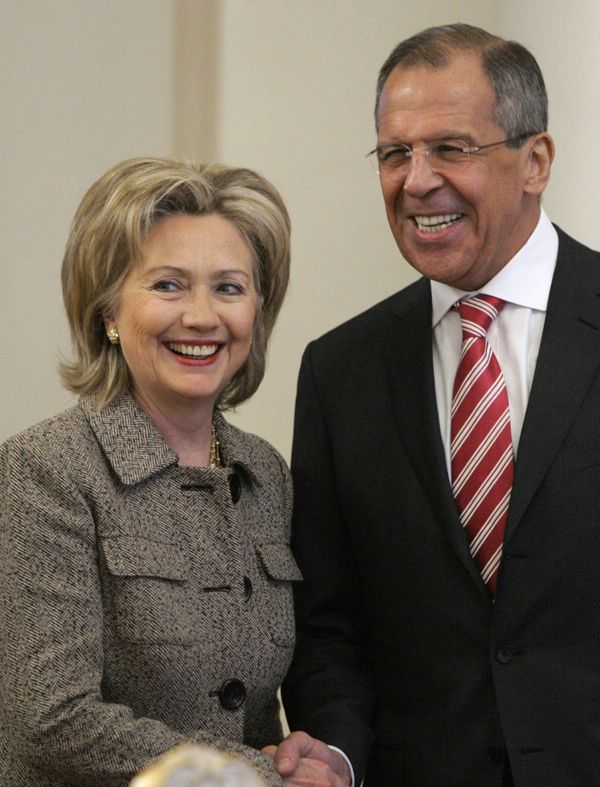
Secretary Clinton With Russian Foreign Minister Sergey Lavrov

U.S. Secretary of State Hillary Rodham Clinton shakes hands with Russian Foreign Minister Sergey Lavrov before their talks in Moscow, Russia March 18, 2010.